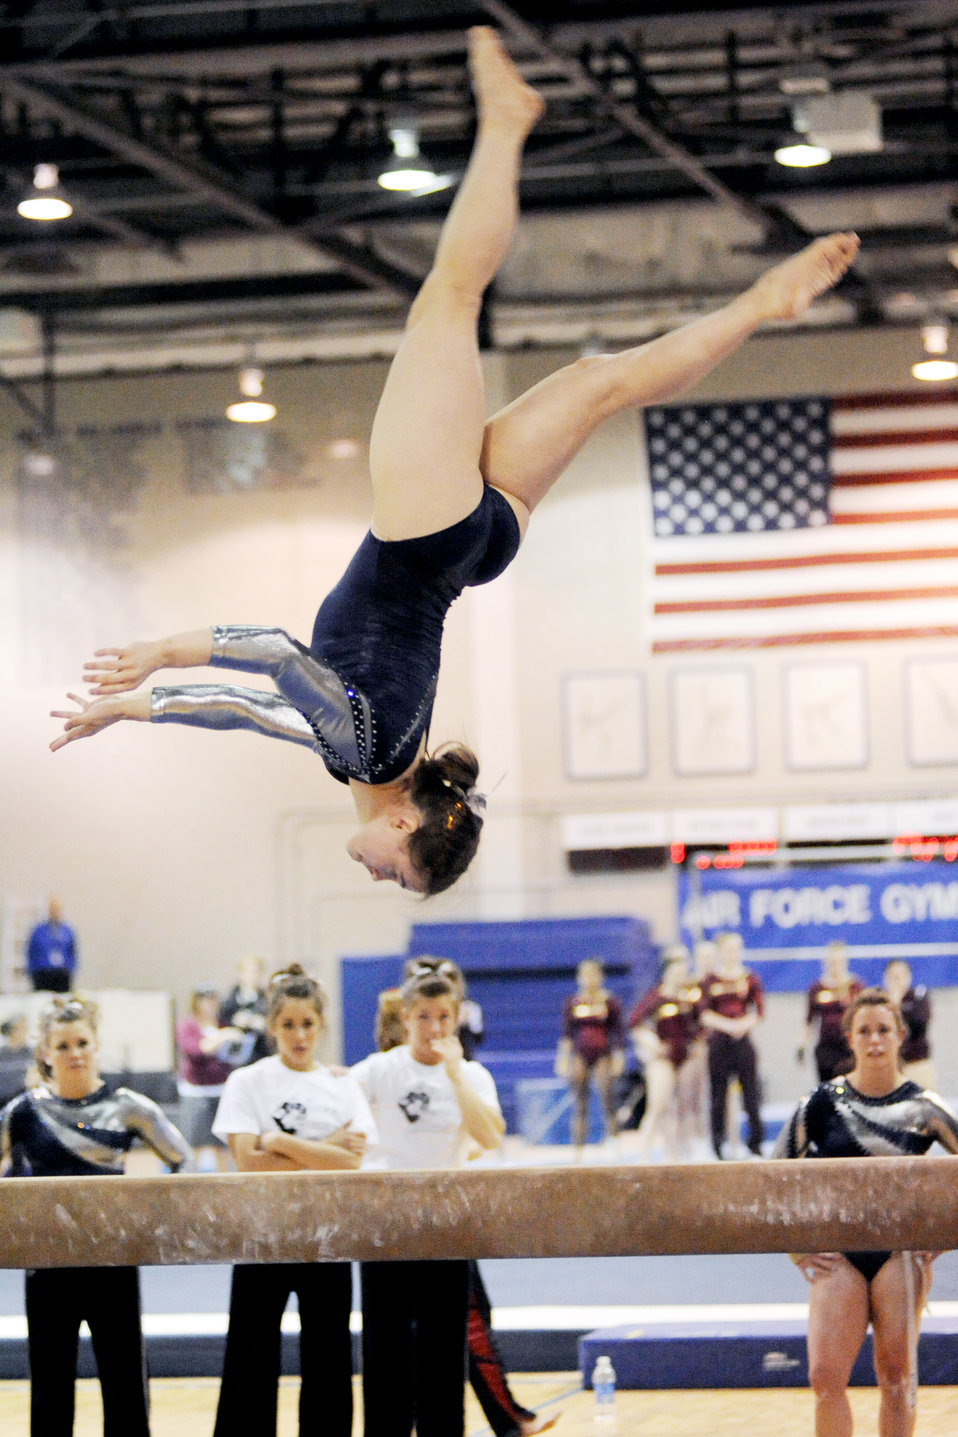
Women gymnasts compete in tri-meet

Falcon sophomore Jenna Dudley flips on the balance beam while competing during the home tri-meet against Southeast Missouri State and Seattle-Pacific in the U.S. Air Force Academy's Cadet Gym Feb. 20, 2010. Air Force placed second in the team competition with a score of 188.00. Southeast Missouri came in first with 194.05 and Seattle Pacific finished with 187.075.